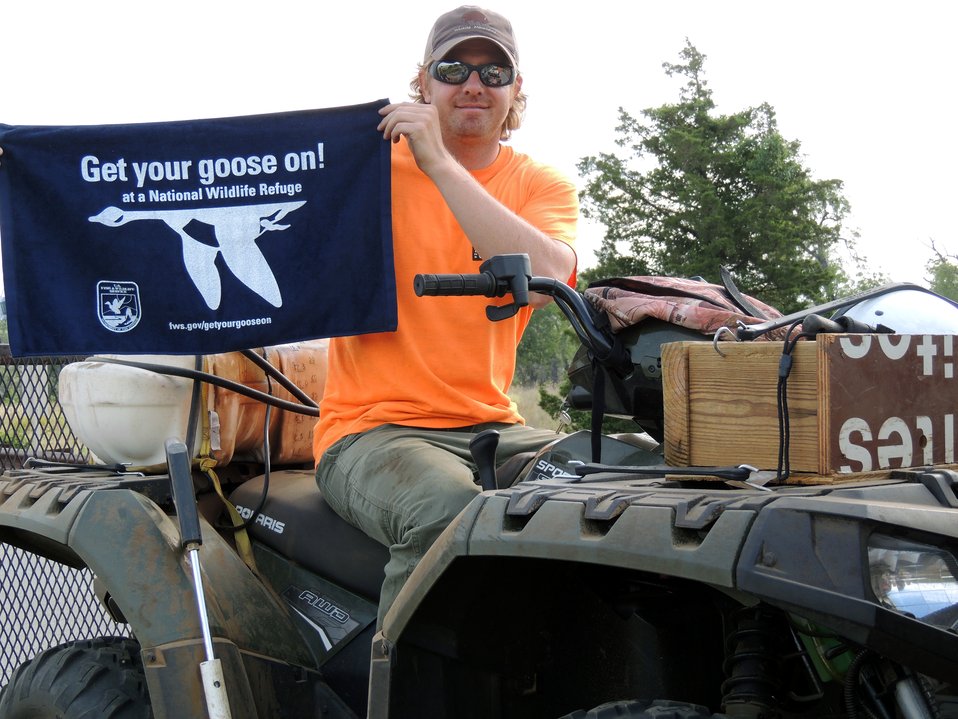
Get Your Goose On!

Wichita Mountains National Wildlife Refuge in Oklahoma.